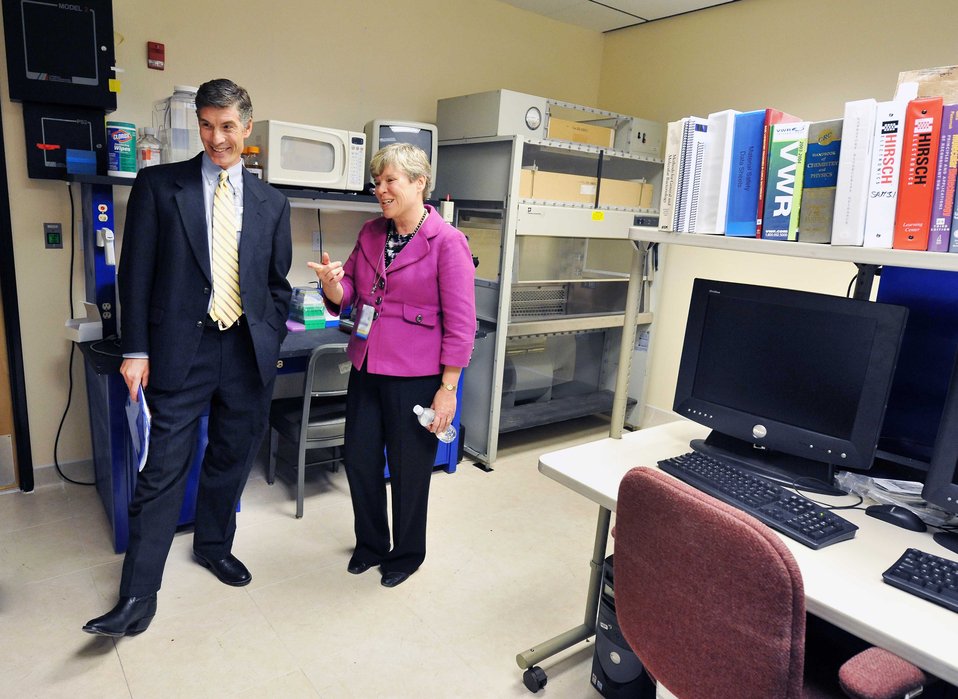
Assistant Secretary Gottemoeller Receives a Tour at the Sandia National Laboratories

Assistant Secretary of State for Arms Control, Verification and Compliance Rose Gottemoeller receives a tour at the Sandia National Laboratories in Albuquerque, New Mexico, on August 18, 2011.